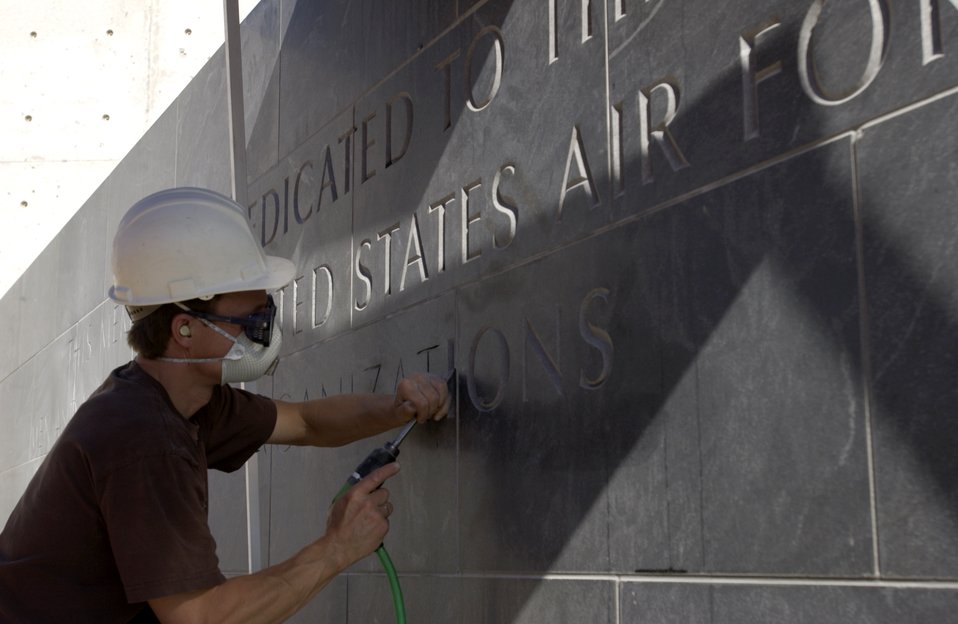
Air Force Memorial progress 'wows' Airmen

Contractor Marcel Machler chisels lettering at the Air Force memorial being built in Arlington, Va.. The memorial will be complete in October, and have three spires representing the core values: integrity first, service before self and excellence in all we do.